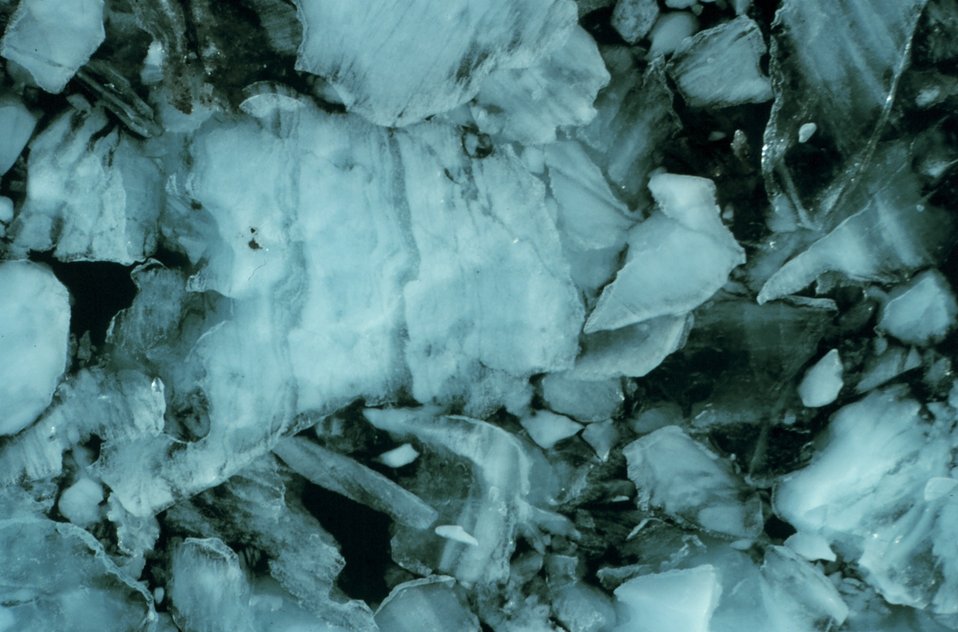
Glacial ice chunks in Icy Bay.